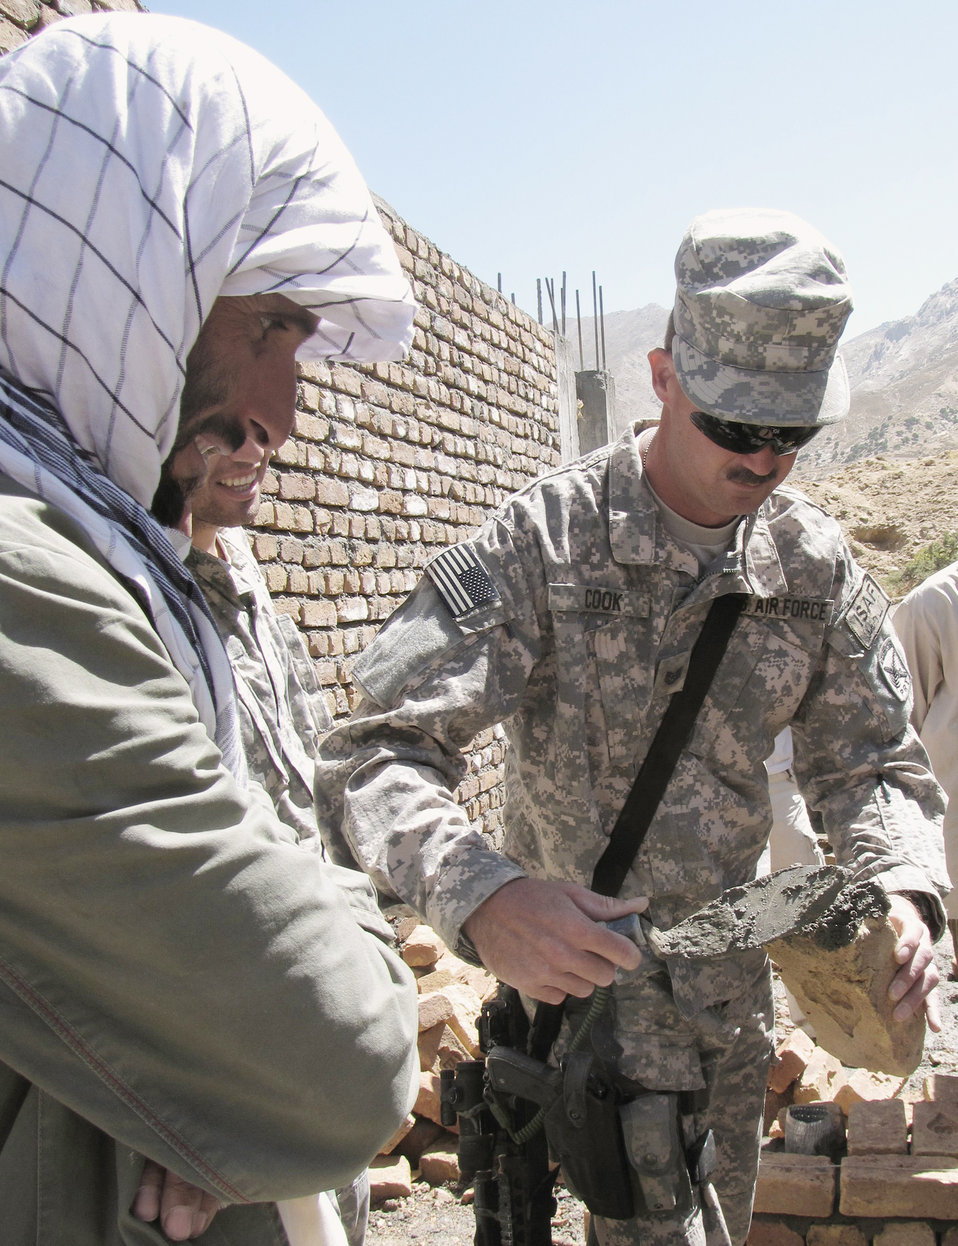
Panjshir PRT proves 'peace, partnership, progress' possible

Tech. Sgt. Jonathan Cook shows Afghan construction workers how to apply cement to bricks evenly Sept. 6, 2009, in Panjshir, Afghanistan. Sergeant Cook is a civil engineer with the provincial reconstruction team here and is a Colorado native deployed from Nellis AFB, Nev.